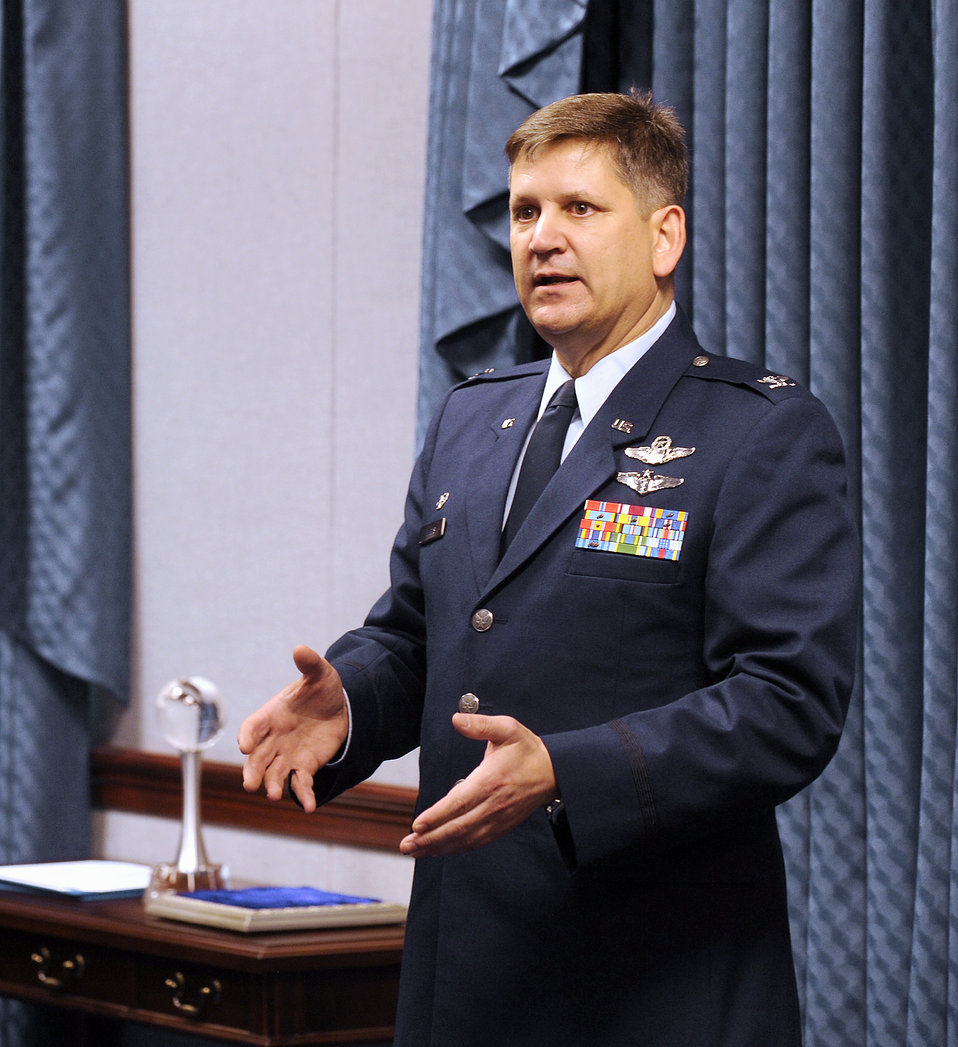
Yokota Airman honored for international affairs excellence

Col. Lee Harvis makes remarks after receiving the Air Force's International
Affairs Excellence Award during a ceremony held in the Pentagon in
Washington, D.C., on May 23, 2012. Harvis currently commands the 374th
Medical Group at Yokota Air Base, Japan.